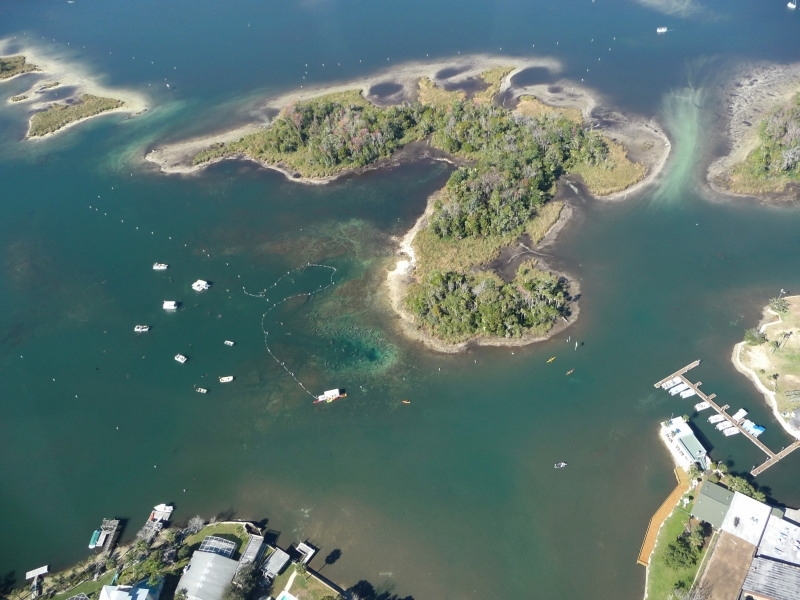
Crystal River NWR

The warm clear waters of Crystal River National Wildlife Refuge in Florida provide a haven for endangered manatees and the boaters, snorkelers and other visitors who flock to see them. (USFWS)